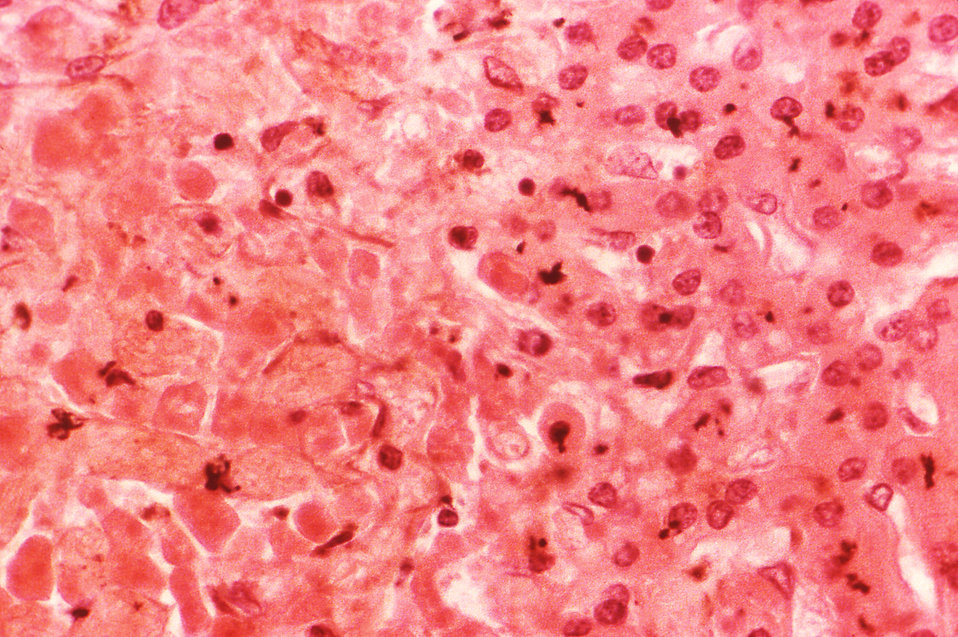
Under a high magnification of 320X, this hematoxylin-eosin-stained (H&E) photomicrograph depicts the cytoarchitectural changes found in a liver tissue specimen extracted from an 'atypical' viral hepatitis patient. This particular view details a region of hepatic acidophilic necrosis, within which are a number of nearly-mature Councilman bodies. There was also some extravasation of blood into the sinusoidal capillaries within this necrotic region. When viral hepatitis is categorized as being of the atypical type, it usually means that there is an accompanying infection such as yellow fever, or malaria. Though in this particular case, any concomitant infection was unidentified.